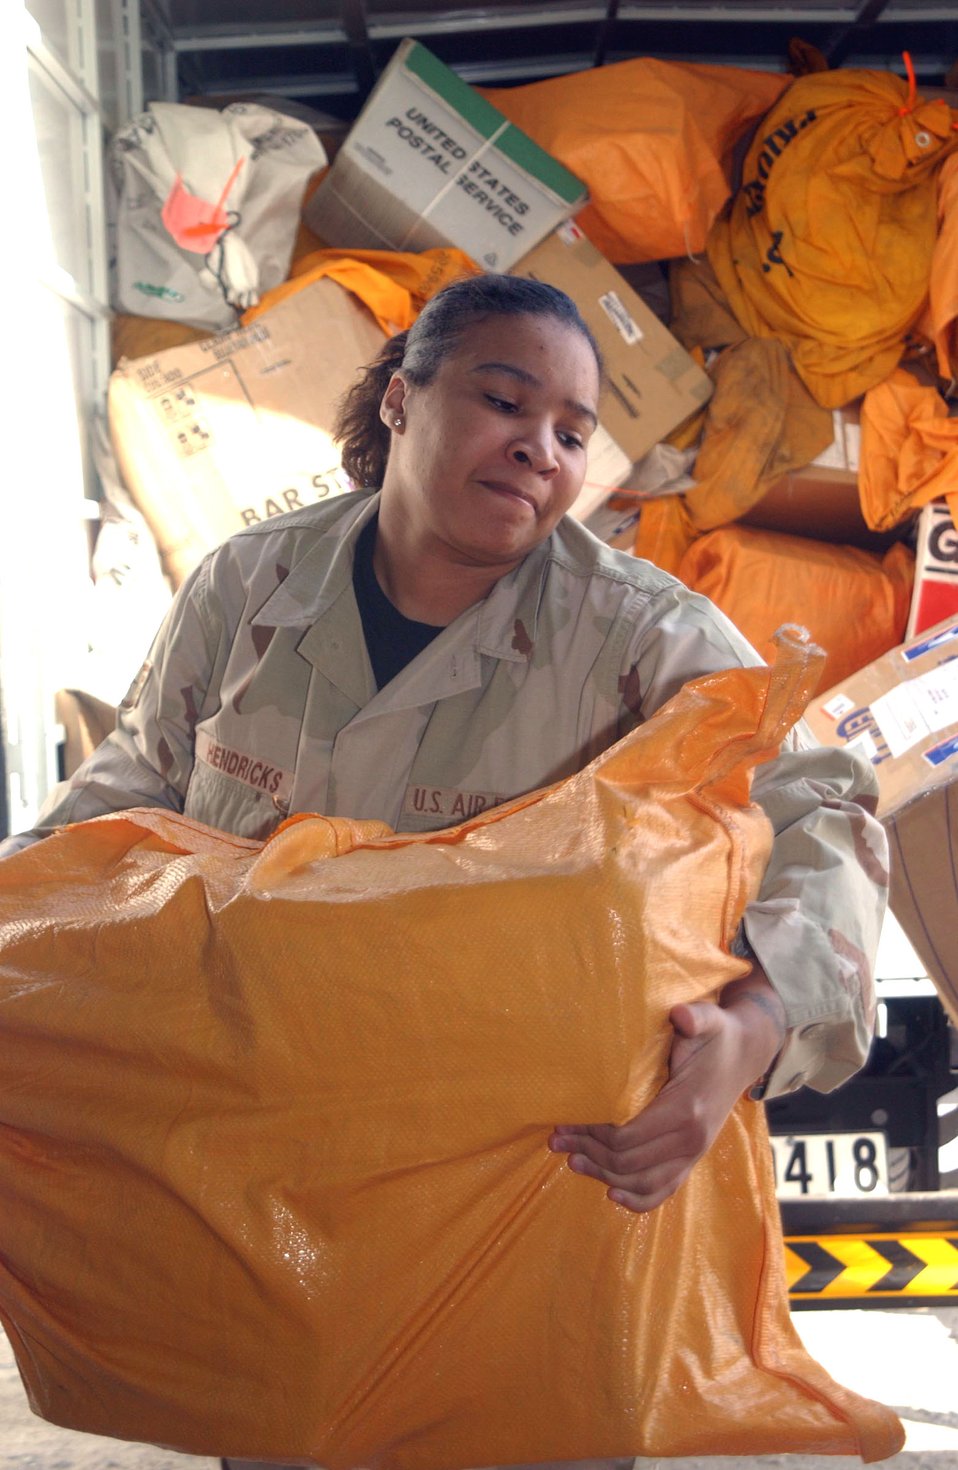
Mail's here

SOUTHWEST ASIA (AFPN) -- Staff Sgt. Terrika Hendricks unloads packages and bags of mail from a postal delivery truck at this forward-deployed location. The 380th Expeditionary Communications Squadron post office receives and sends mail for more than 1,400 servicemembers. Sergeant Hendricks is deployed from Royal Air Force Lakenheath, England.